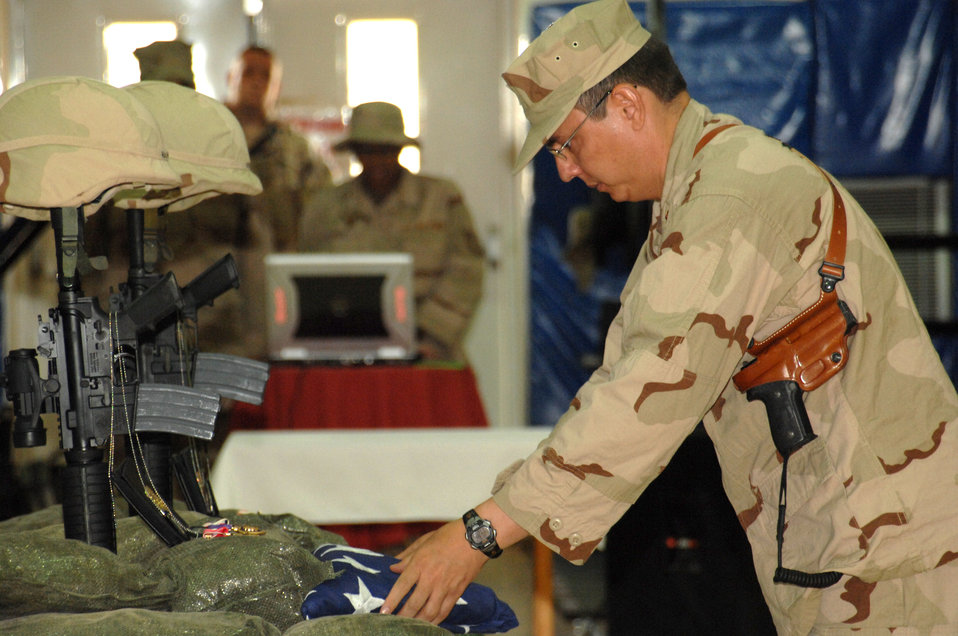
Final tributes paid to Airmen killed in Iraq

Maj. Michael Howard, the Air Force Office of Special Investigations Expeditionary Detachment 2410 commander, presents a flag during a memorial ceremony June 8 honoring Special Agents Tech. Sgt. Ryan Balmer and Staff Sgt. Matthew Kuglics at Kirkuk Regional Air Base, Iraq. The agents were killed in action June 5 while supporting Operation Iraqi Freedom.